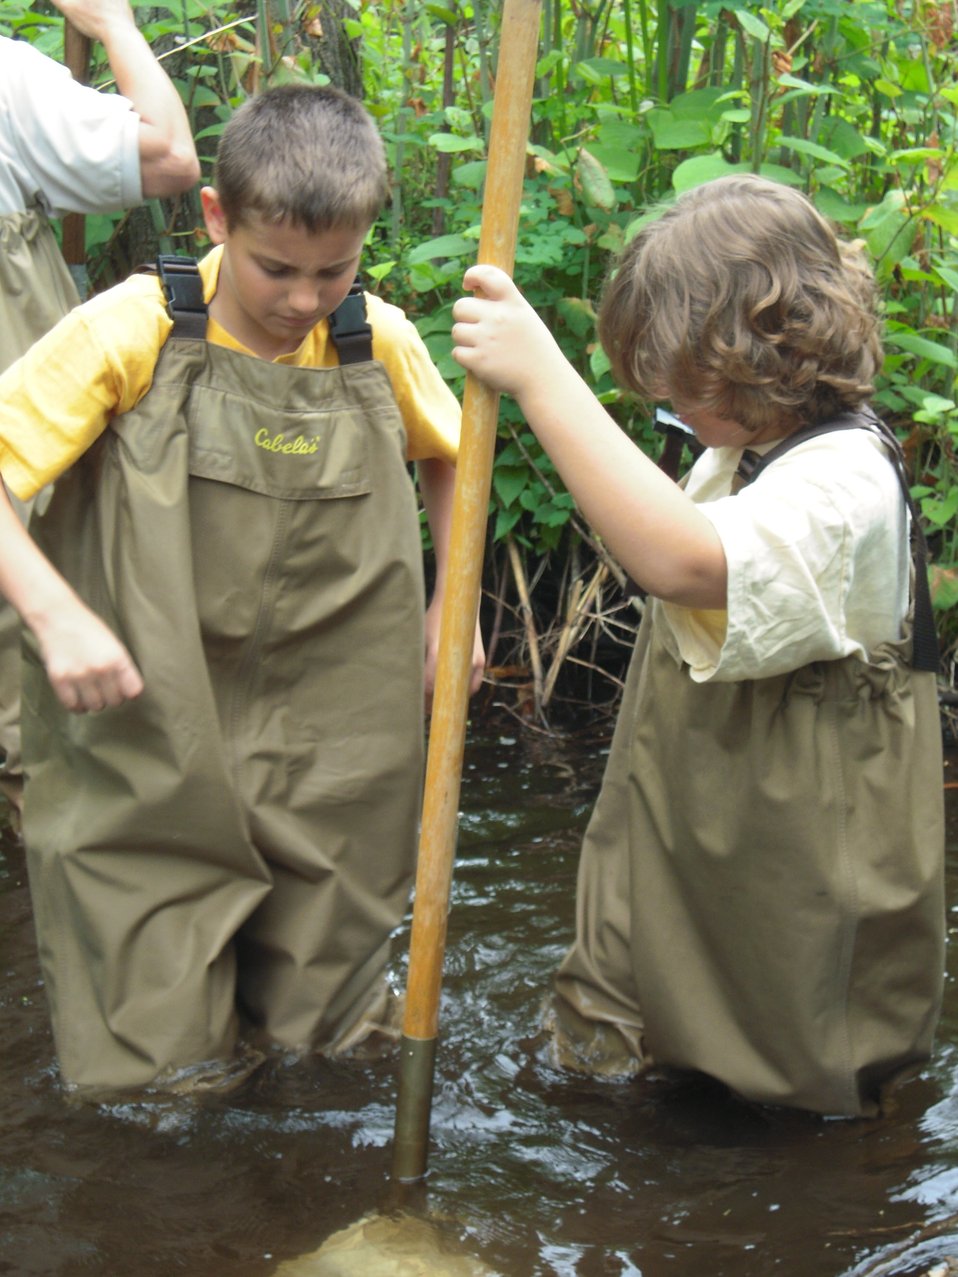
Looking to catch species in the stream